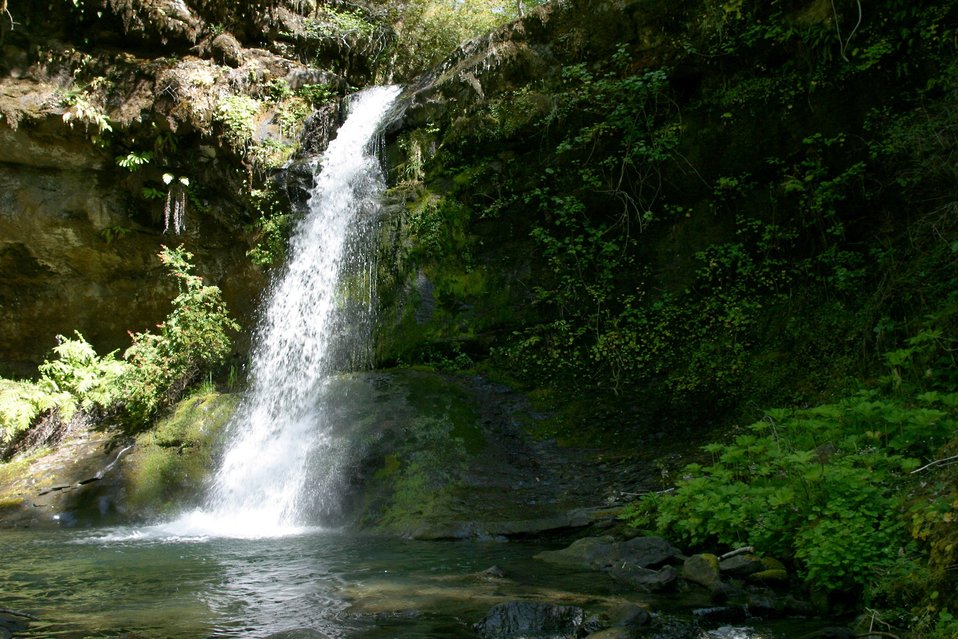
Wild section of the Rogue River from Grave Creek to Foster Bar May 19 to May 22.